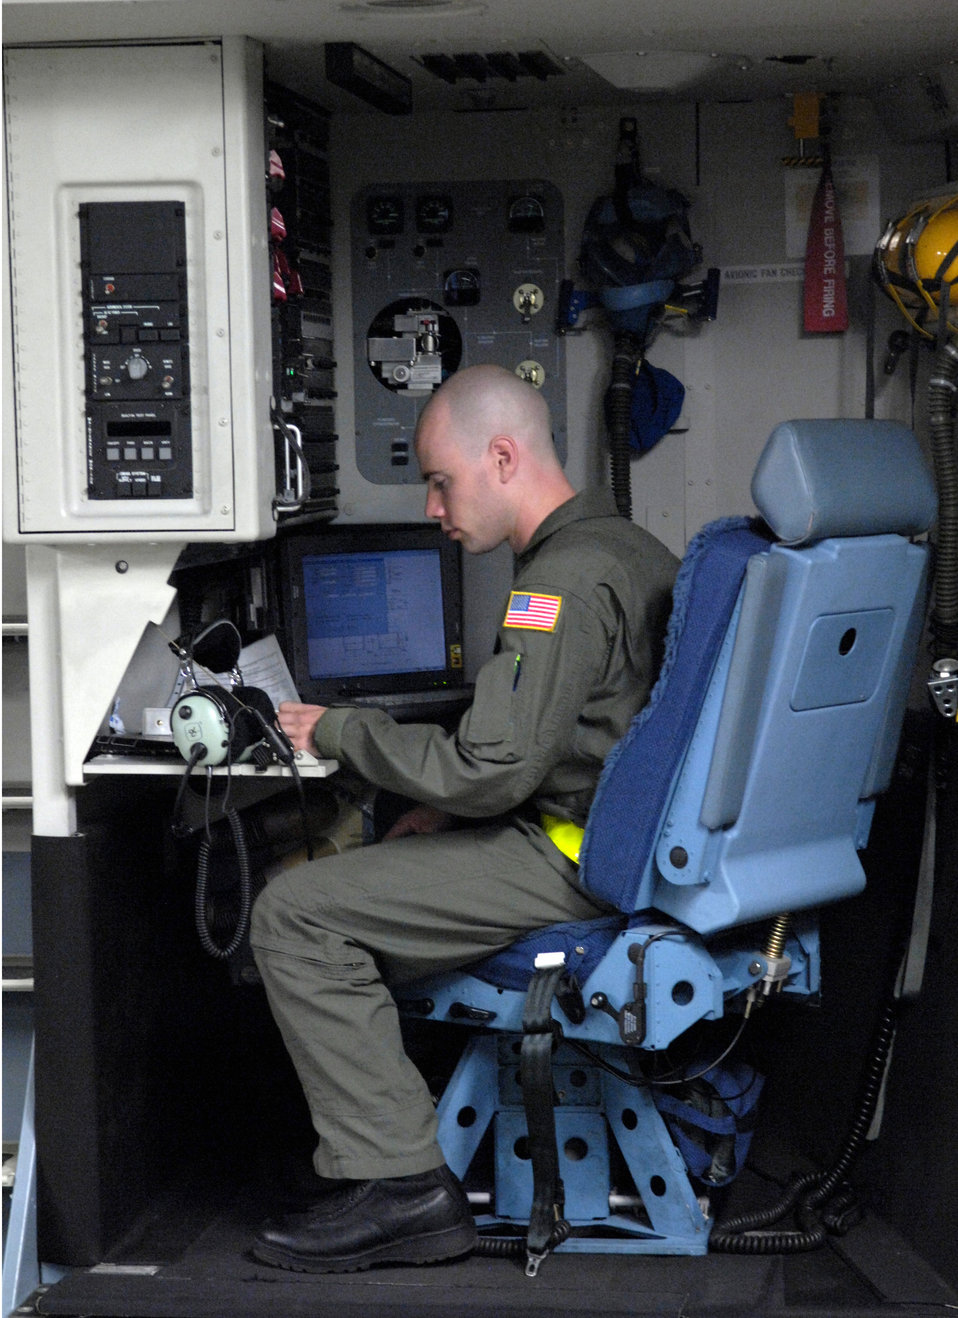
Global presence

Senior Airman Nick Kaslin goes over a checklist before departing for a local training mission Jan. 19 from Hickam Air Force Base, Hawaii. Airman Kaslin is a loadmaster with the 535th Airlift Squadron. The C-17 is capable of rapid strategic delivery of troops and all types of cargo to main operating bases or directly to forward bases in the deployment area.